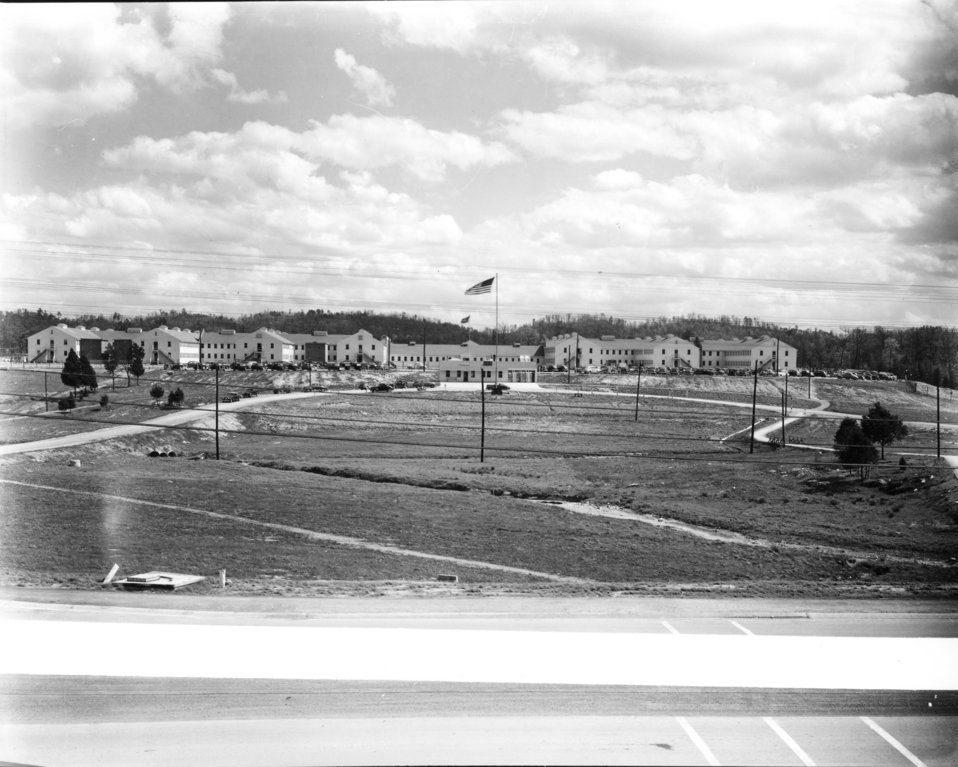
Services at Oak Ridge